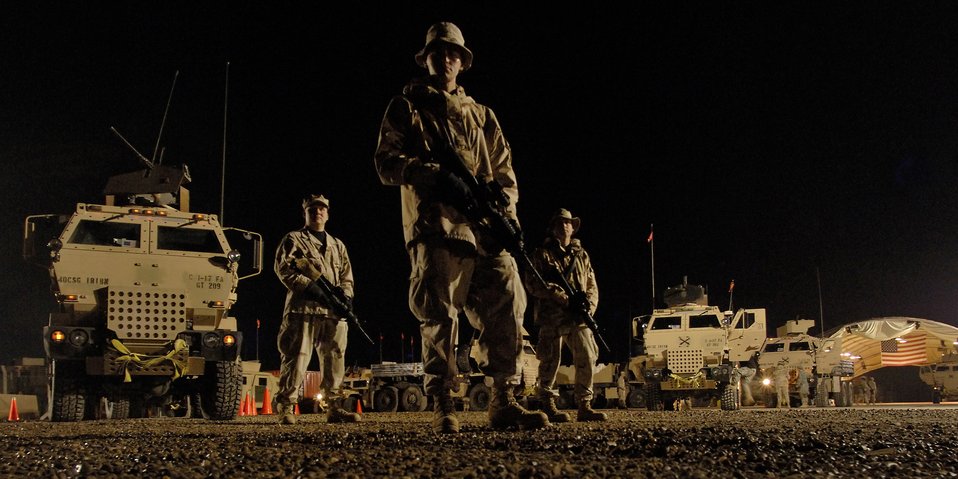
Convoy duty

BALAD AIR BASE, Iraq -- (From left) Tech. Sgt. Andrew Morin and Staff Sgts. Jeremy Garcia and Frank Stibler keep an eye on how the 181st Transportation Battalion's convoy security team prepare their convoy escort platforms and rehearse a